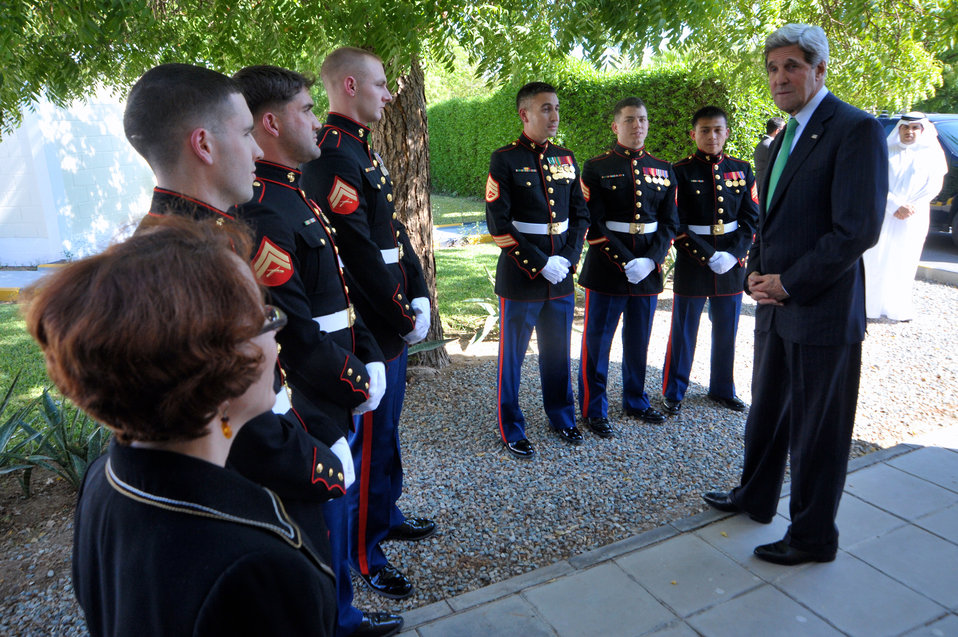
Secretary Kerry Thanks Consul General Casper and Marine Security Guards

U.S. Secretary of State John Kerry thanks Consul General Anne Casper and members of the Marine Security Guard detachment as he visits the U.S. Consulate General in Jeddah, Saudi Arabia, on June 25, 2013.